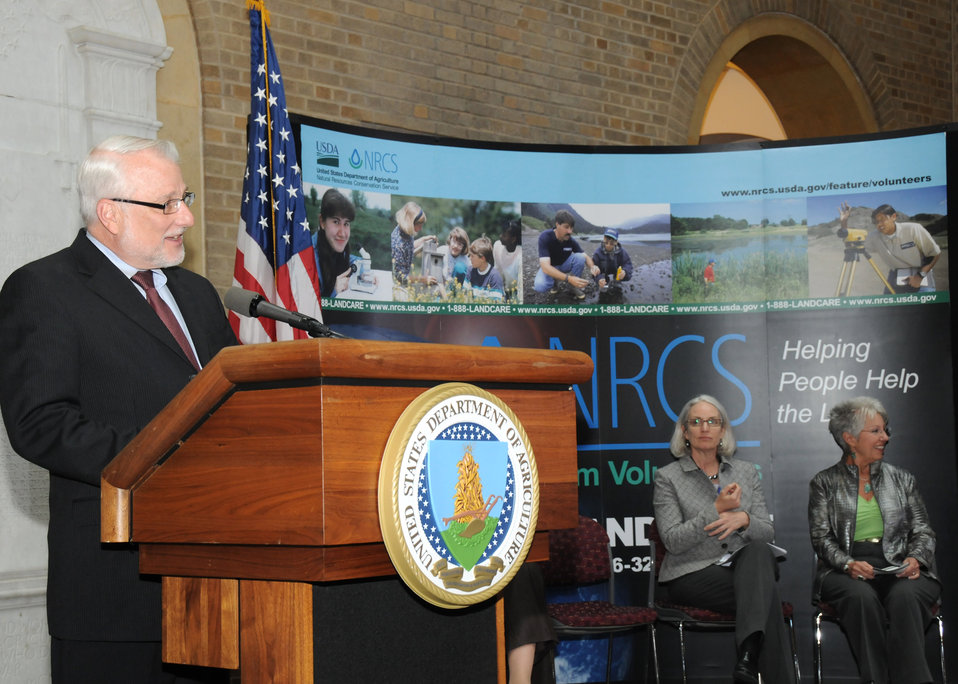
Natural Resources Conservation Service (NRCS) Chief Dave White makes congratulatory remarks to the National Earth Team volunteers at a ceremony held at the U.S. Department of Agriculture in Washington, D.C., on Monday, April 26, 2010. (Seated L to R NRCS Deputy Under Secretary Ann Mills and First NRCS National Earth Team coordinator Judy Johnson) USDA photo 10di1328-21